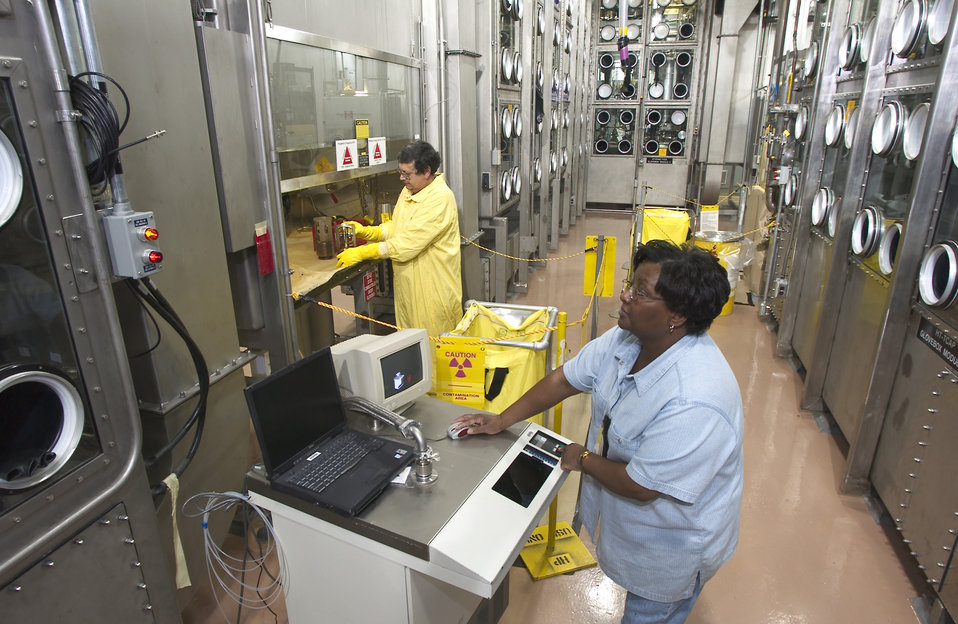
Inside the Tritium Consolidation and Modernization Project (TCON), part of the Savannah River Site Tritium Complex.

TCON, which consolidates tritium processing and handling activities into the Tritium facilities, is on schedule for completion in September 2004. Advantages to the consolidation it allowed the deactivation of the 50 year old 232-H building. The new areas of the main tritium processing building began 'hot' (radioactive) testing in December 2003, with full operations started in August 2004.